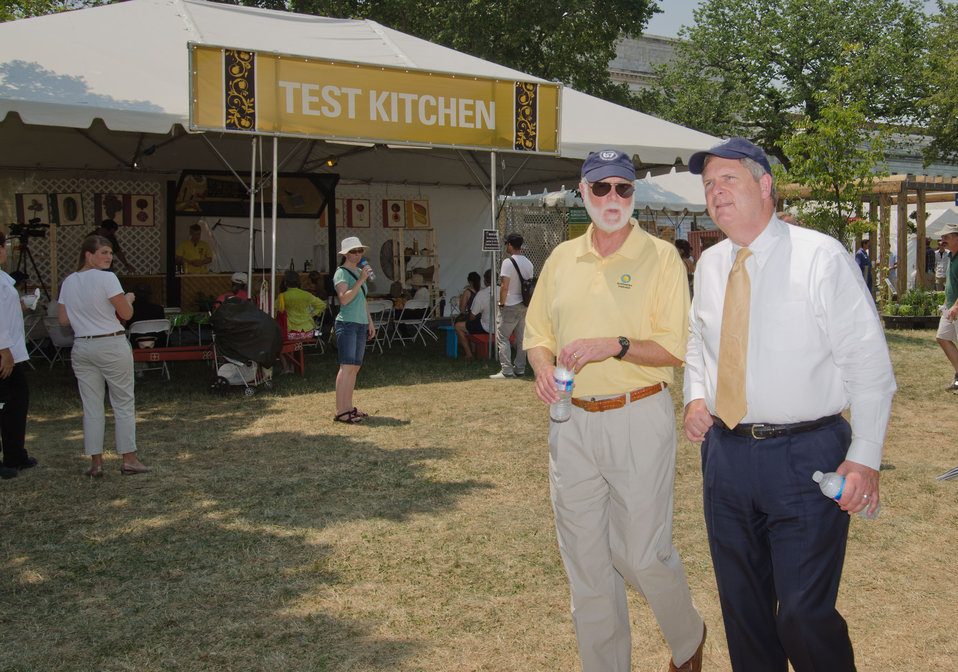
Smithsonian Institution Secretary G. Wayne Clough talks to Agriculture Secretary Tom Vilsack about various aspects of the 2012 Smithsonian Folklife Festival, on the National Mall in Washington, D.C. on Friday, June 29, 2012 Near by is the Mississippi State University Mobile Veterinary Clinic that serves the Northern Mississippi area by providing Spay and neuter services to those in need, and provides medical experience for students. One of the three themes this year is “Campus and Community.” It celebrates the 150 years of the USDA and the Land-Grant University System. The U.S. Department of Agriculture (USDA) and the Land-Grant system extend education across the country, contributing to American agriculture success and rural prosperity. “Campus and Community” has demonstrations, discussions, hands-on activities, and entertainment to that showcase the many ways that this partnership works to improve American agriculture and rural life.